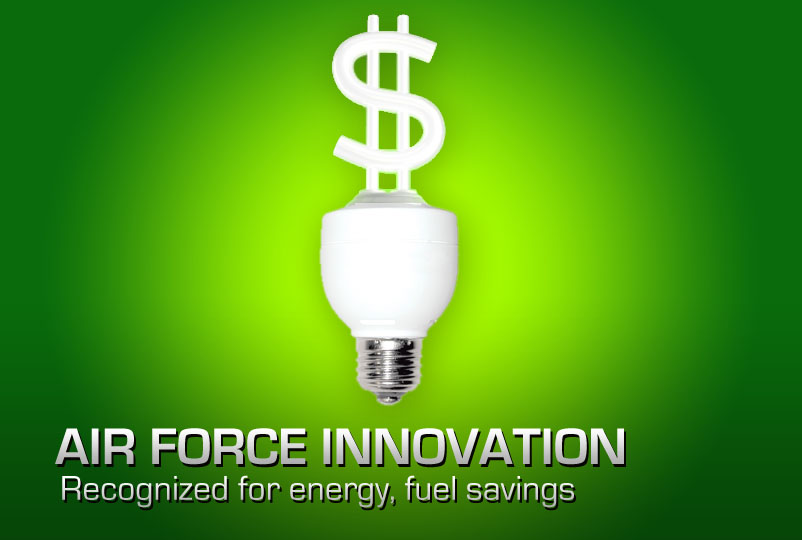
Air Force Innovation